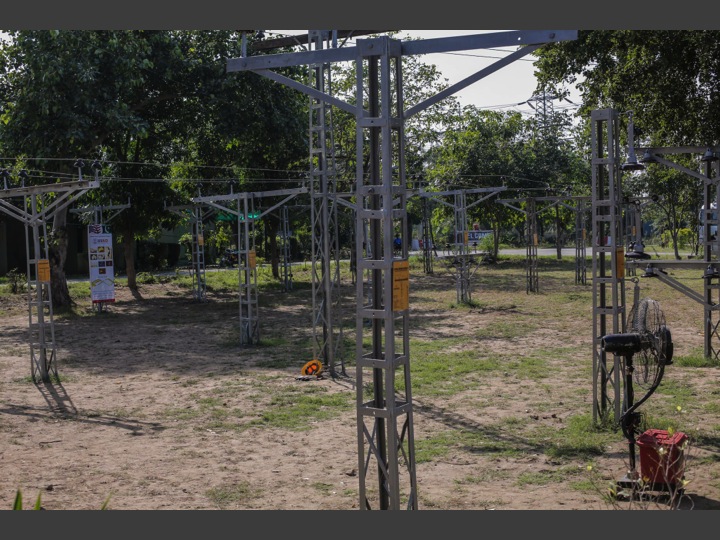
Training yard at RTC LESCO